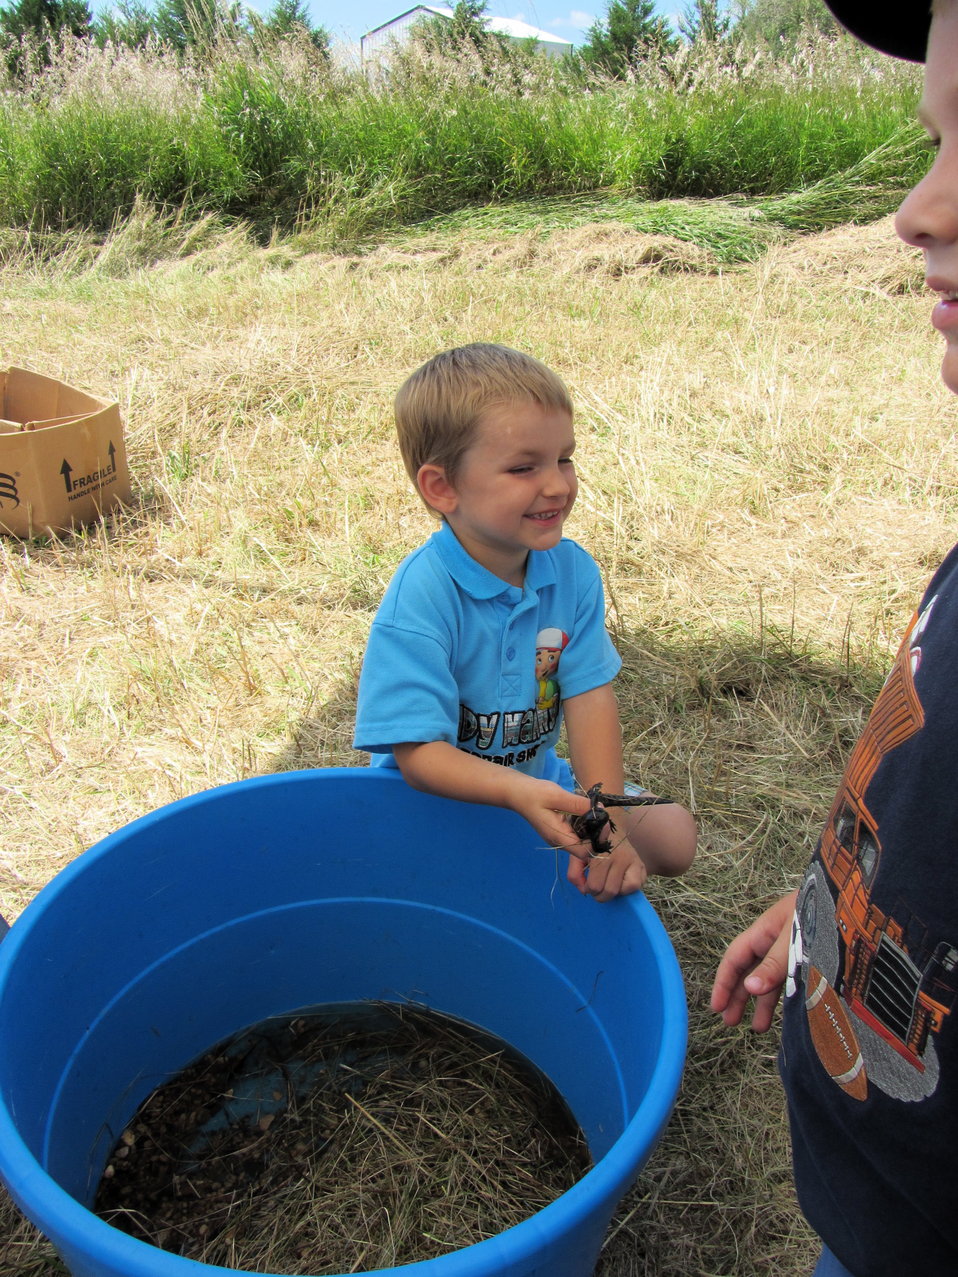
2011 Huron Prairie Fest